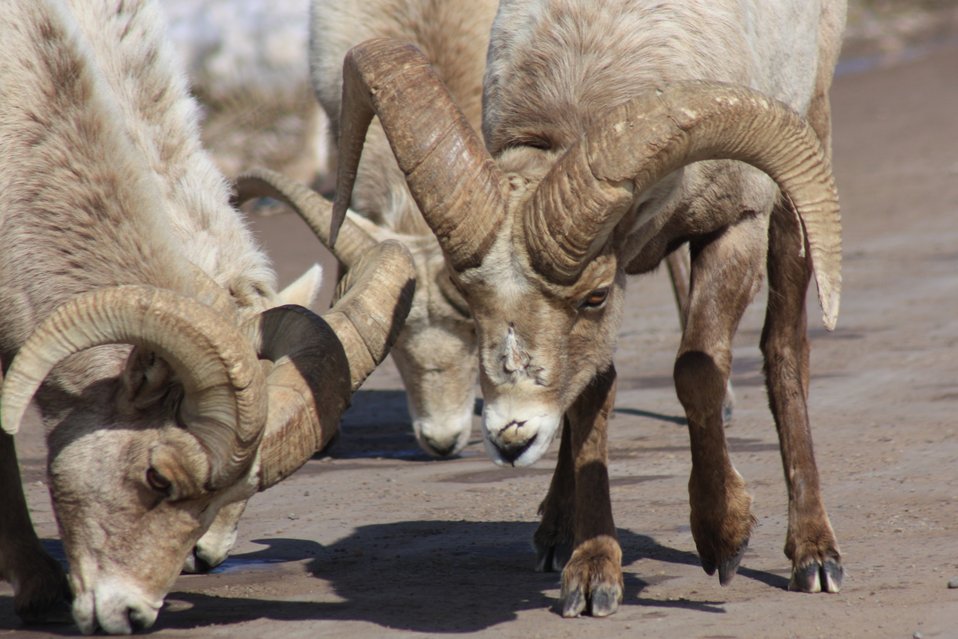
Bighorn Sheep Scarring

An older ram displays scars on both the bridge of his nose and on his horn. The scarring may be due to a number of causes, including fighting or physical injury.

Credit: USFWS / Ann Hough, National Elk Refuge volunteer